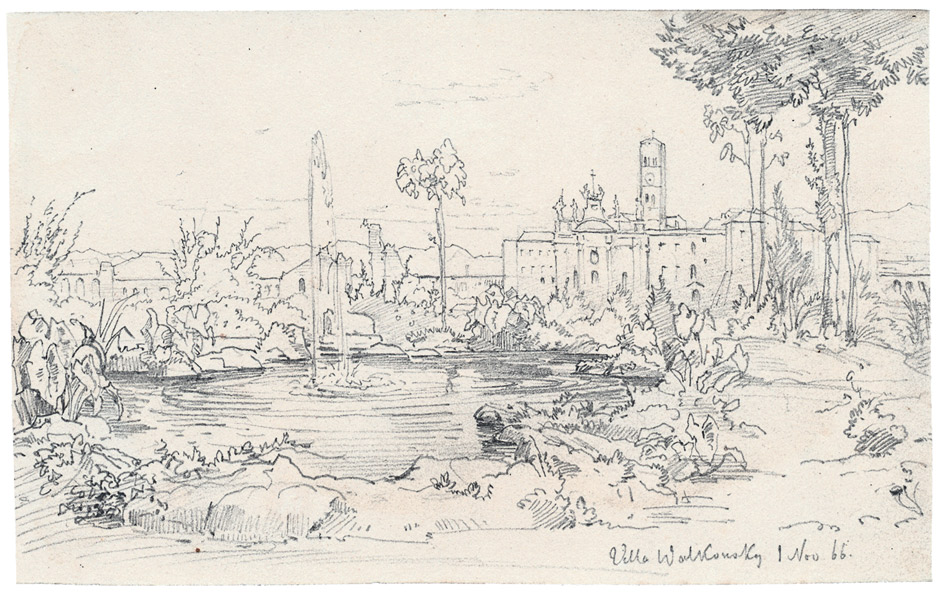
Im Park der Villa Wolkonsky in Rom, im Hintergrund S. Croce in Gerusalemme. Bleistift auf Papier. 11,2 x 17,8 cm. Betitelt und datiert 'Villa Wolkonsky 1 Nov 66'.